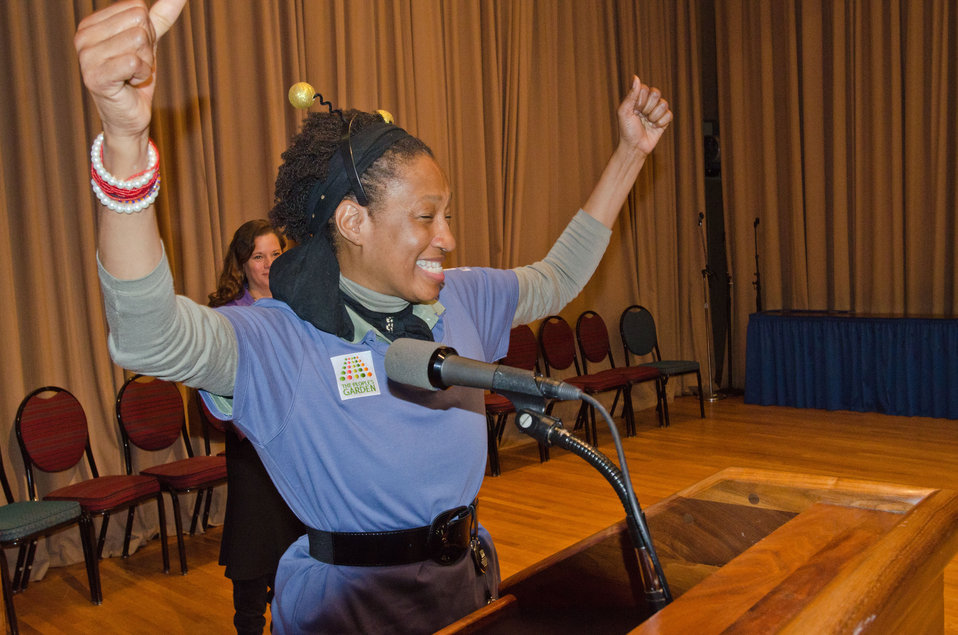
Graduation day of the 2011 U.S. Department of Agriculture (USDA) Executive Master Gardeners, on Tuesday, November 8, 2011 in Washington, DC. During the past six-weeks, students contributed 40-hours of volunteer time, completed studies and testing to receive their certificates today as an Executive Master Gardener. Many of the sessions occurred before work hours, during lunchtime or at community garden project sites such as Powell Middle School. USDA challenges its employees to establish People's Gardens at USDA facilities worldwide or in community gardens. People's Gardens vary in size and type, but all have a common purpose - to help the community and the environment. To learn about the People’s Garden Initiative visit www.usda.gov/wps/portal/usda/usdahome?contentid=peoples g....